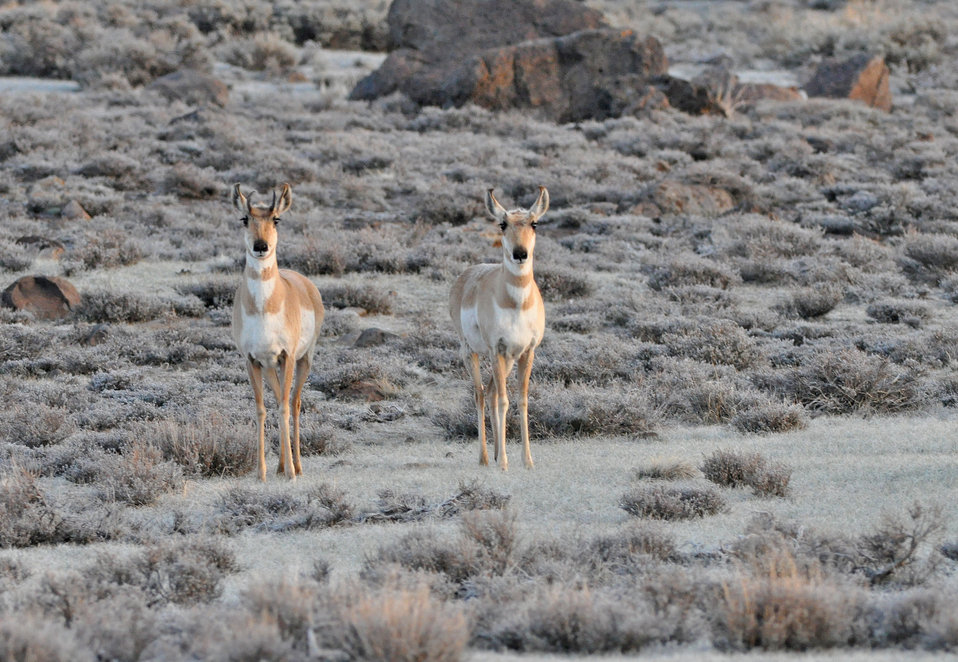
Pronghorn

Photo Credit: Jeannie Stafford/USFWS
Pronghorn (Antilocapra americana) are endemic to interior western and central North America. In North America they are commonly referred to as pronghorn antelope or simply antelope as it closely resembles the true antelopes of the Old World. They can run exceptionally fast and they are often cited as the second-fastest land animal, second only to the cheetah. These females were photographed at a greater sage-grouse lek near Bridgeport, CA.